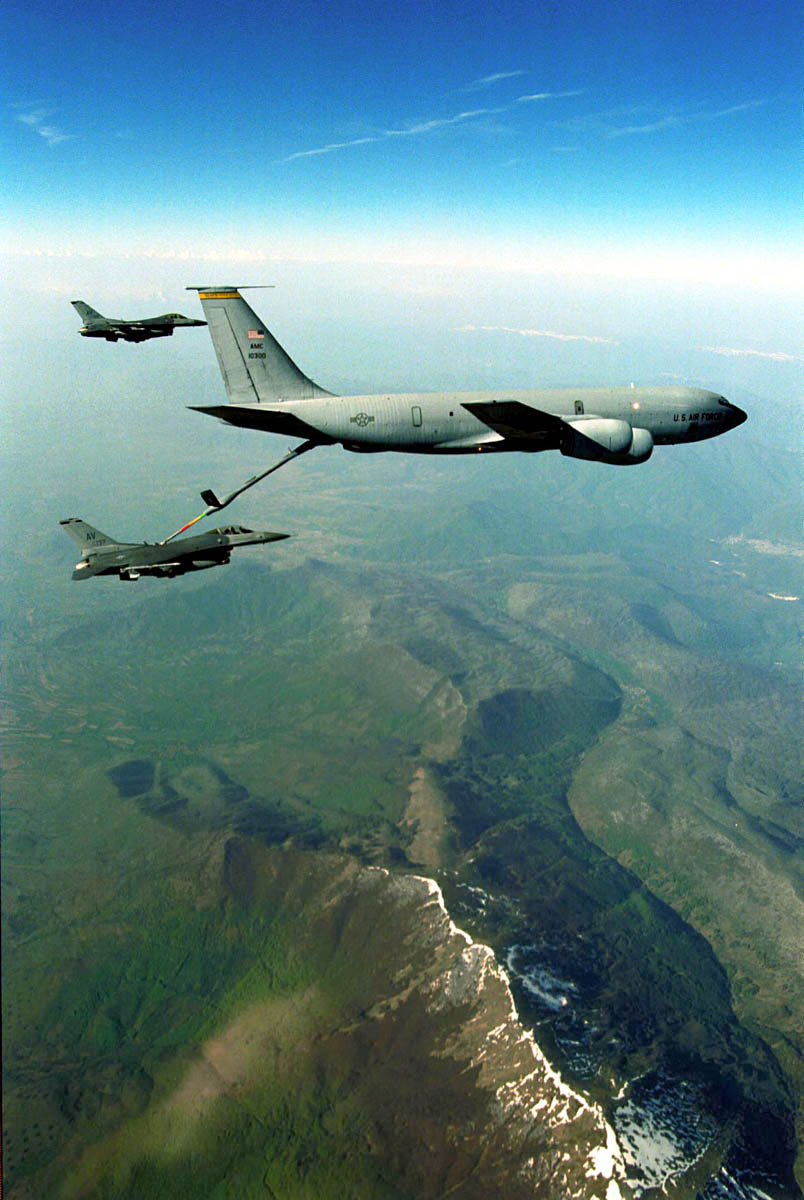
Allied Force refueling

A pair of F-16 Fighting Falcons from the 510th Fighter Squadron, Aviano Air Base, Italy, take fuel from a KC-135 over northern Bosnia as part of a combat air patrol mission in support of NATO's Operation Allied Force.